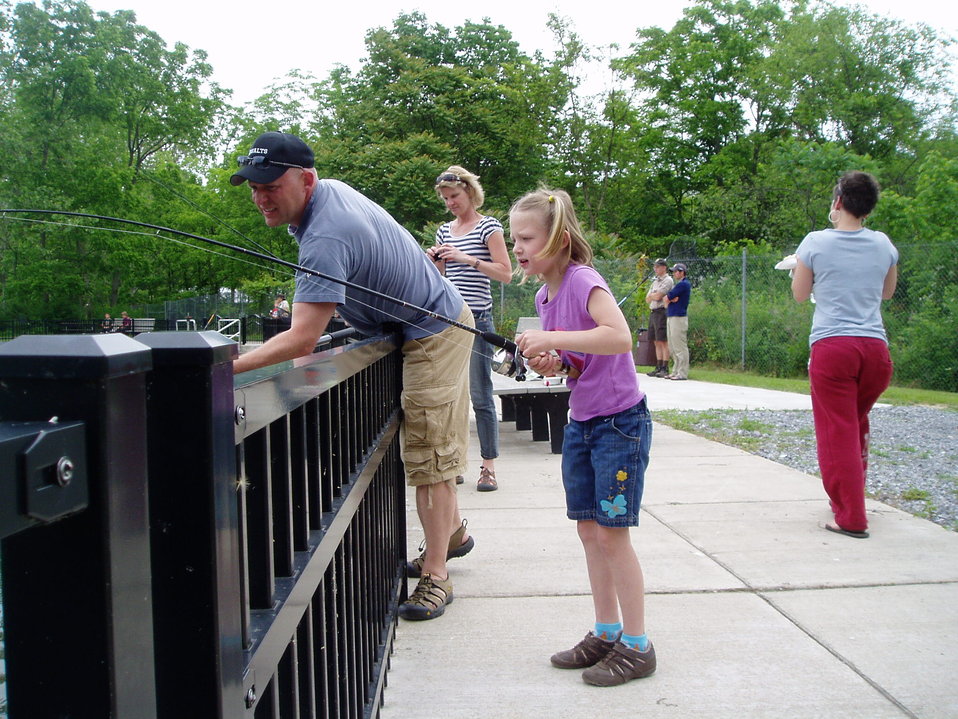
Northeast Fishery Center's Annual Fishing Event

Girl reels in a fish at the Northeast Fishery Center's annual fishing event.